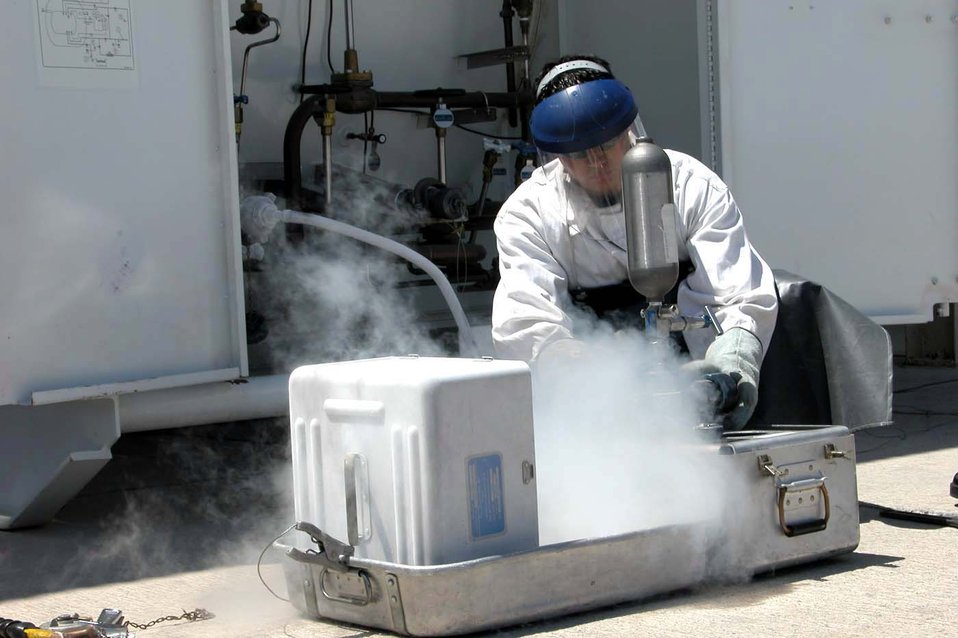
Liquid O

NELLIS AIR FORCE BASE, Nev. -- Senior Airman Gilbert Partida takes a sample of liquid oxygen stored here. Liquid oxygen can reach temperatures of minus 297 degrees. Airmen sample it every 90 days to ensure the oxygen is at least 99.5-percent pure so pilots can use the oxygen when they fly. Airman Partida is a laboratory technician assigned to the 99th Logistics Readiness Squadron fuels flight.